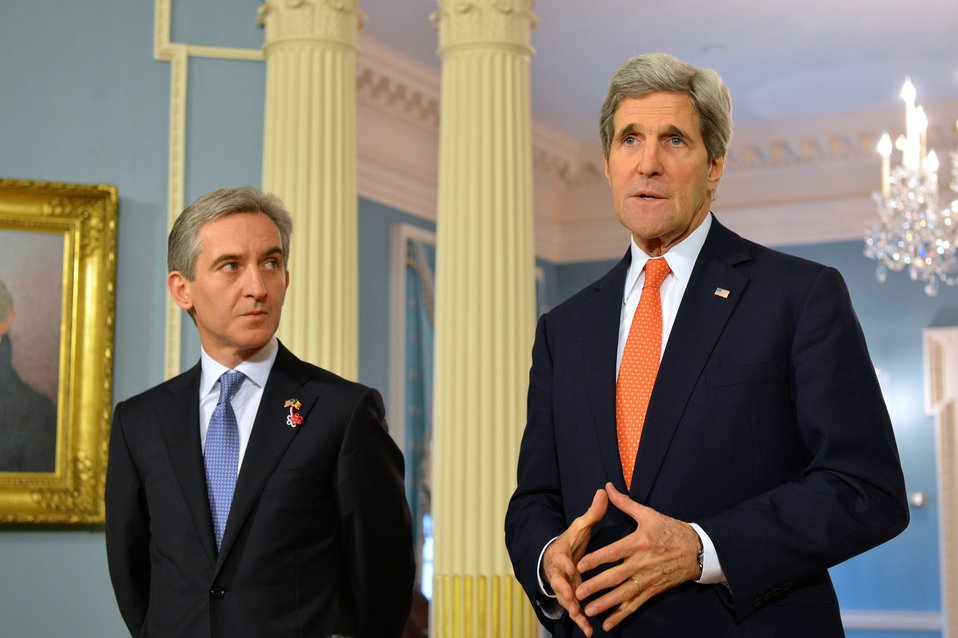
Secretary Kerry and Moldovan Prime Minister Leanca Address Reporters

U.S. Secretary of State John Kerry and Moldovan Prime Minister Iurie Leanca address reporters after their bilateral meeting at the U.S. Department of State in Washington, D.C., on March 3, 2014.